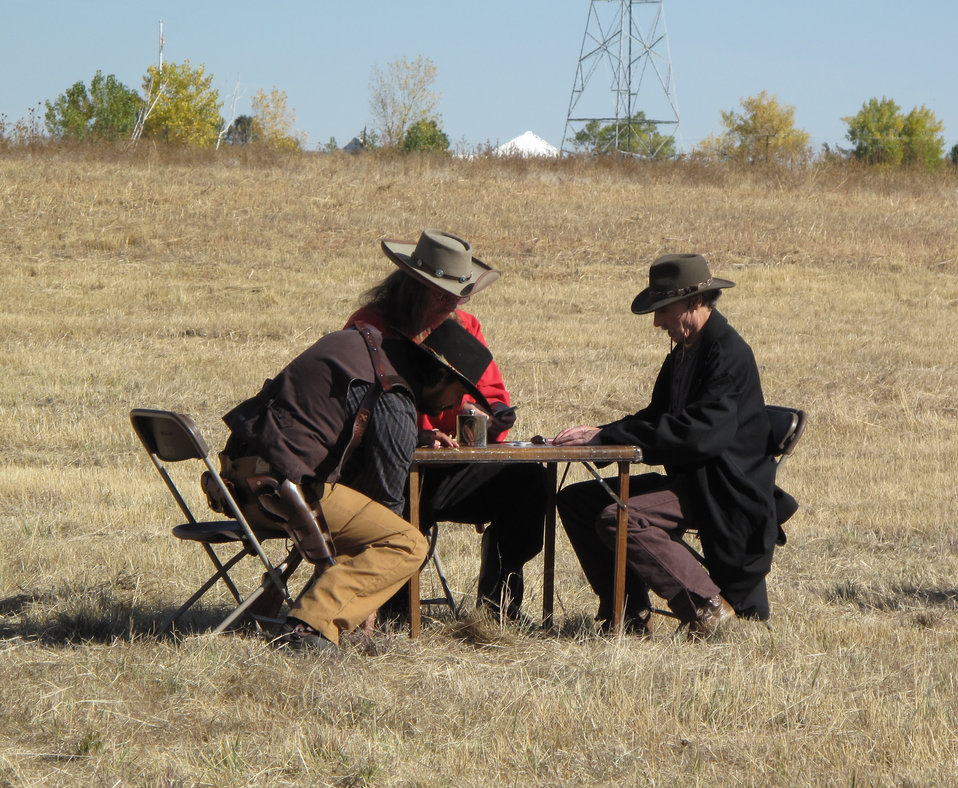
Refuge Round-up 2010

Salooon reenactment.